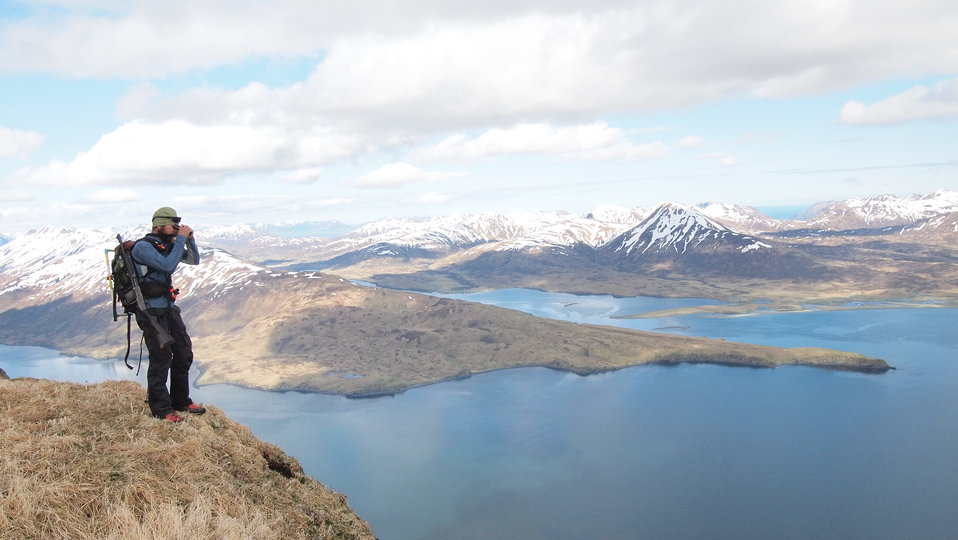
Hepburn Peninsula Lookout

Research volunteer Intern surveys the peaks of Southeast Kodiak for Mountain Goats.

Contact: Lisa Hupp@fws.gov

Source: Kodiak NWR